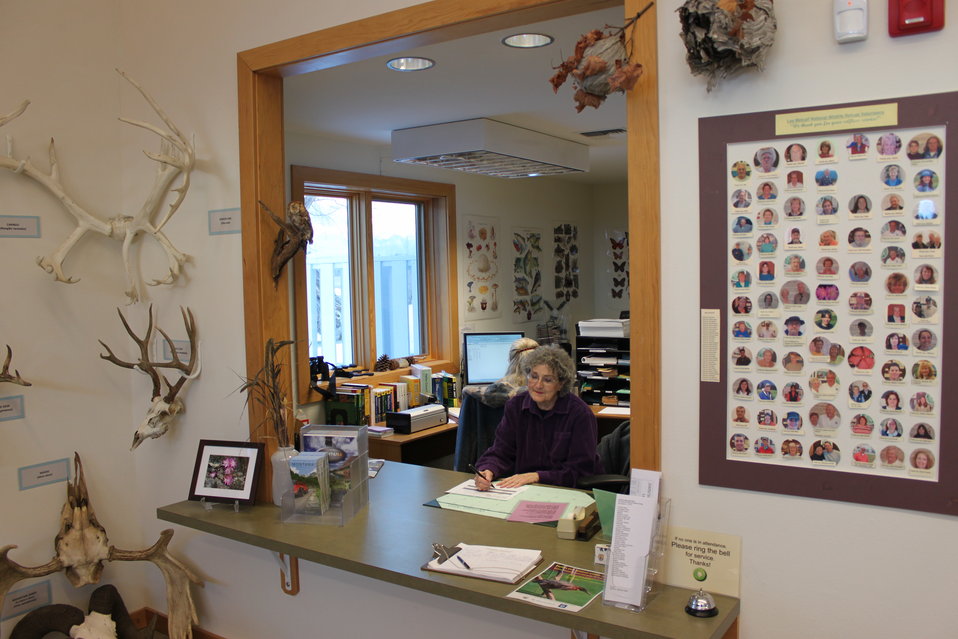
Volunteer

Betty Mayes and husband Arlo consistently staff the Lee Metcalf National Wildlife Refuge Visitor Center on Friday mornings. Both do an excellent job of helping public visitors and assisting Refuge staff.